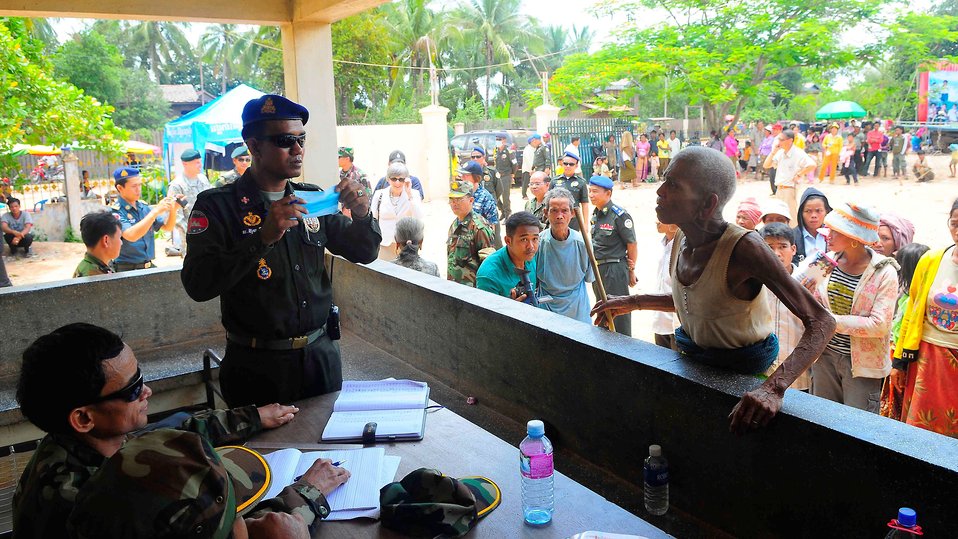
A Medical Patient Receives Screening from a Cambodian Military Medical Professional

A medical patient receives a medical screening from Cambodian military medical professionals during a medical civic action program in Rattanakiri, Cambodia, in support of Pacific Partnership 2010, on June 18, 2010.